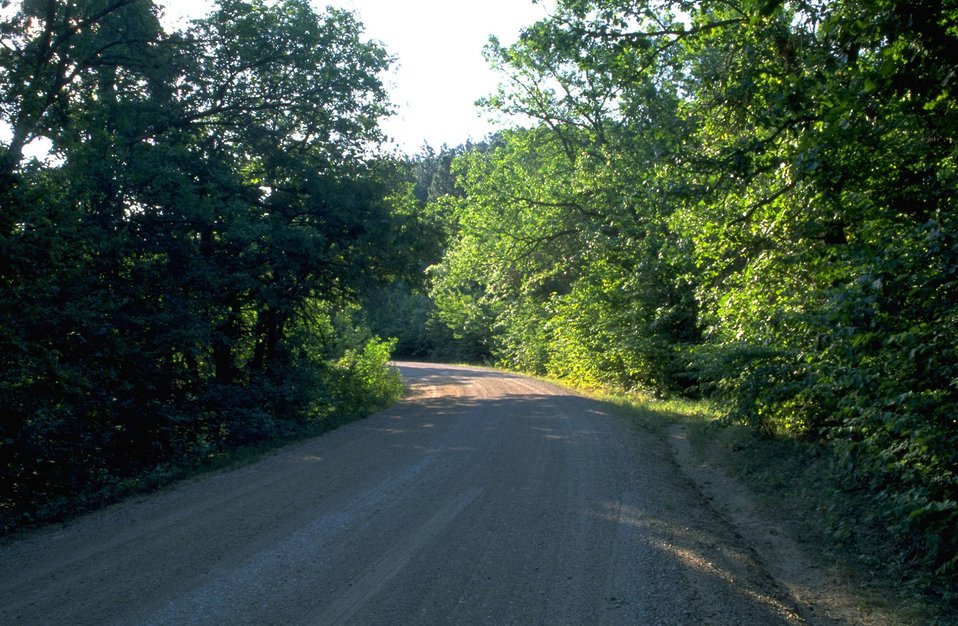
Back Country Byway at the south end of Fort Meade